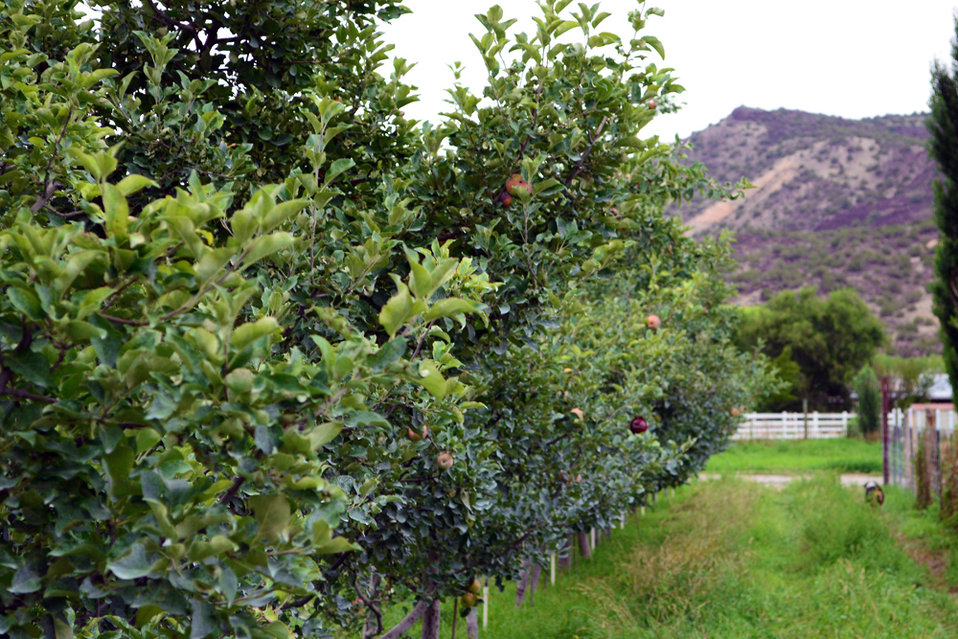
Freshies 1

Fruit trees grow on Freshies Farm.